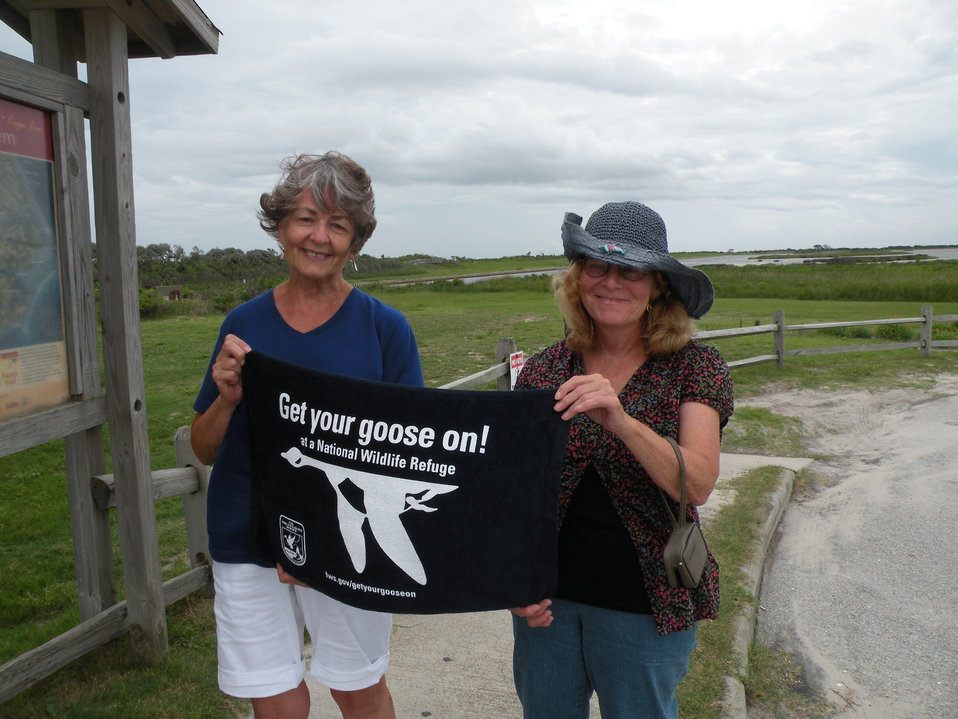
Get Your Goose On!

Visitors at PINWR enjoying the refuge stop to Get Their Goose On!

Ashlyn Knight/USFWS